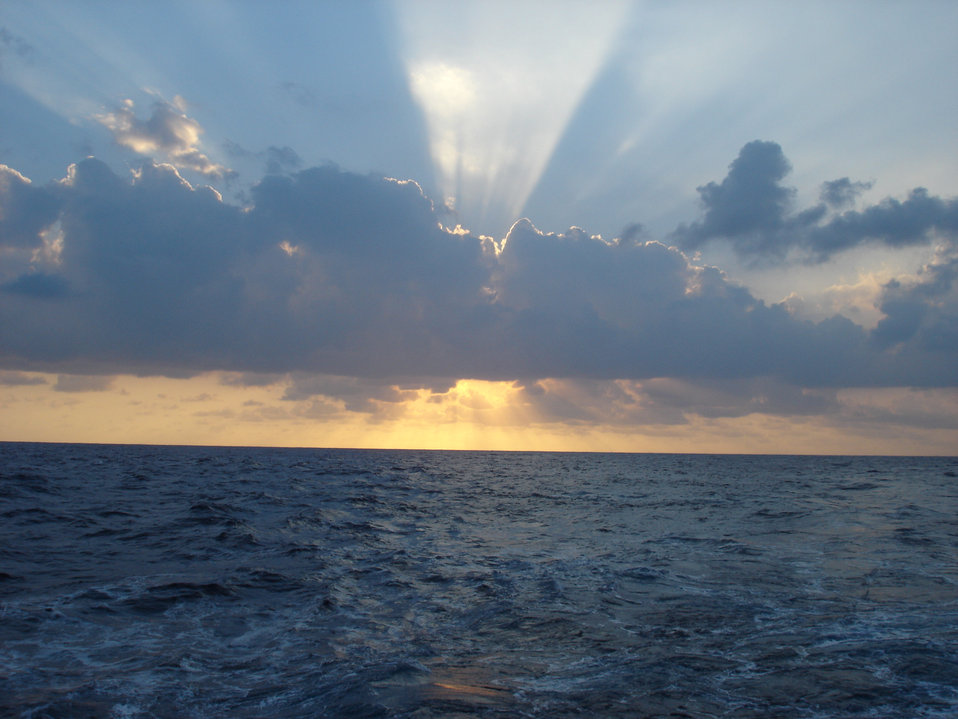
Shadow bands and light bands during a tropical sunset